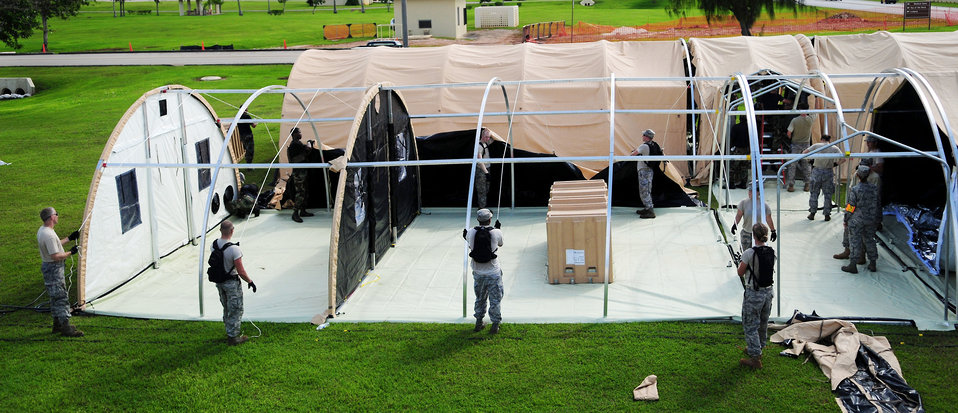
Humanitarian assistance team completes evaluation at Andersen

Members of the 36th Medical Group and the 36th Contingency Response Group work together to construct operational tents during a simulated exercise for the Humanitarian Assistance Rapid Response Team July 15 at Andersen Air Force Base, Guam. The HARRT is equipped to operate in an austere permissive environment during Phase III of disaster relief operations, supporting 350 to 500 patients per day and can be fully operational within six hours of arrival at the disaster site.